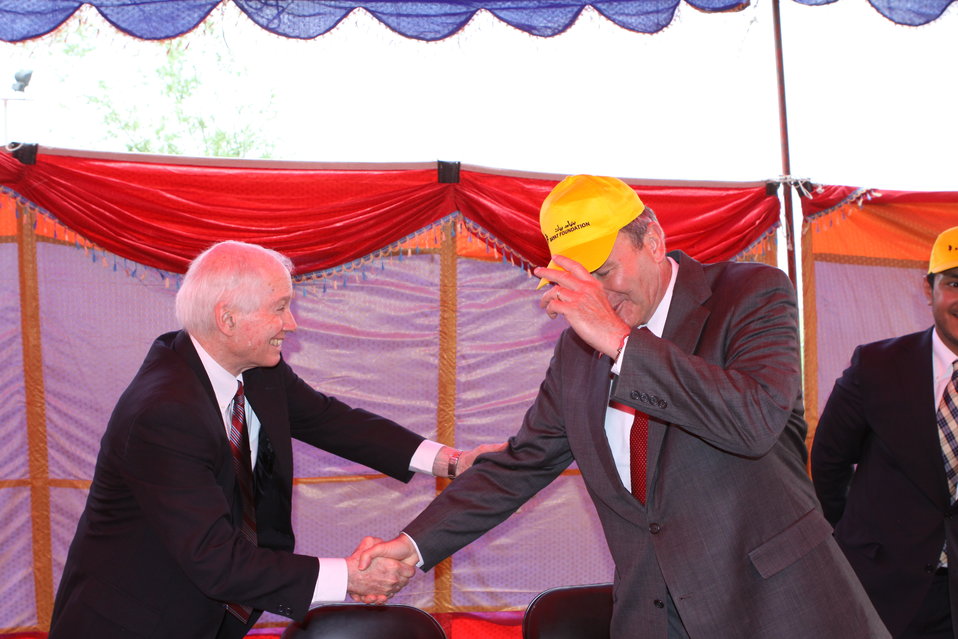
100526 AUAF Graduation 380